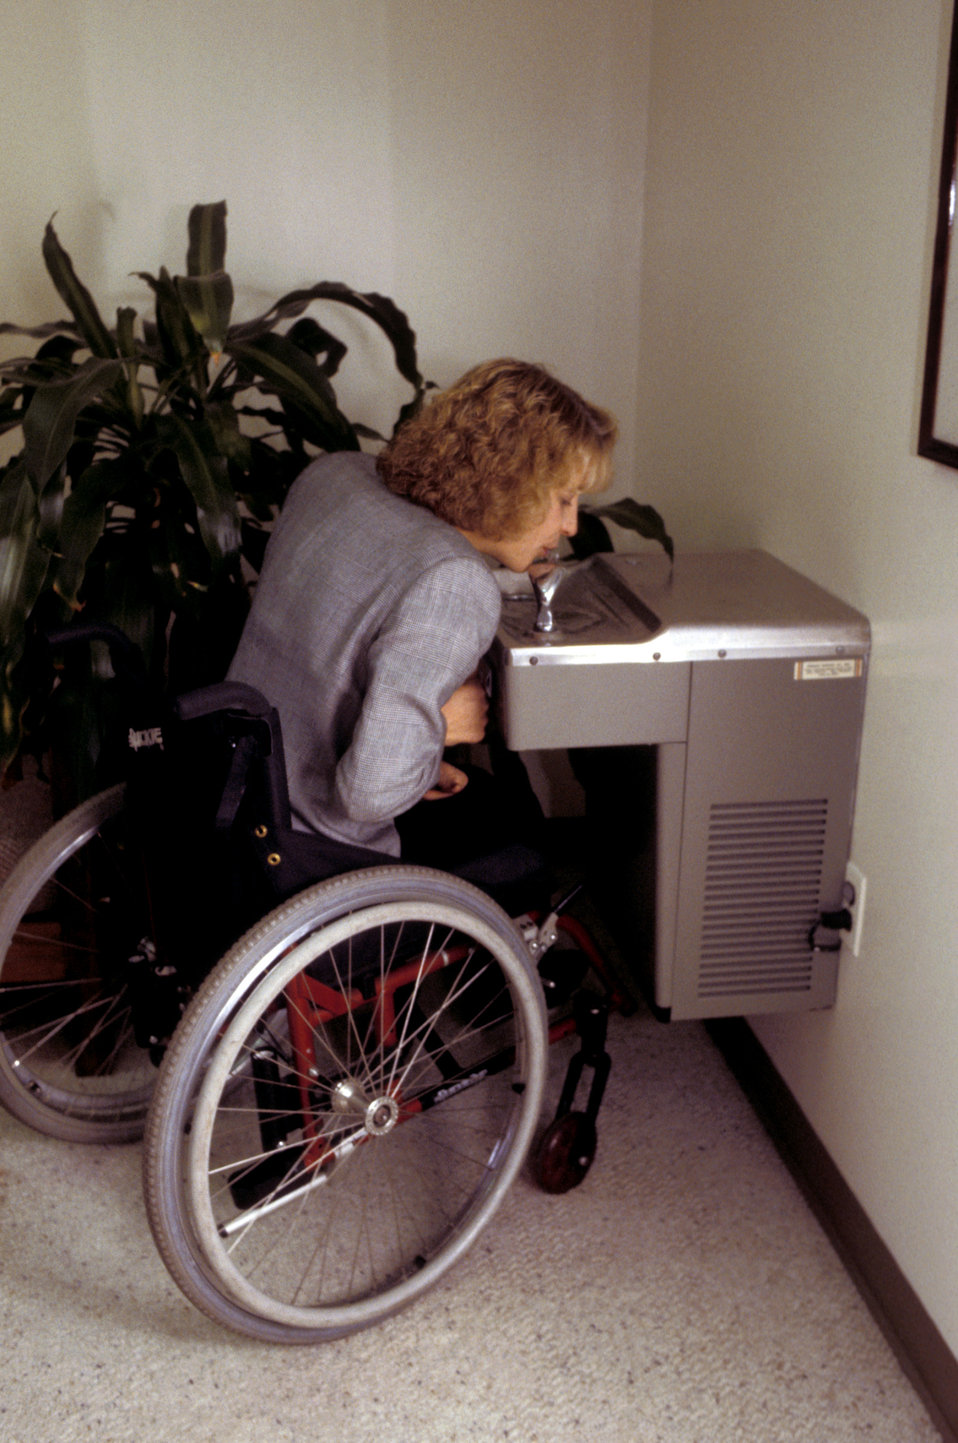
In this 1998 image, a wheelchair-seated woman was about to drink from a stainless steel water fountain which offered two spouts arranged at two different heights, showing that consideration was paid to those mobility-challenged individuals who found themselves in situations such as the one depicted here. Each projecting spout and basin extended out from the wall, and included knee space beneath. The rim-height of the lower unit was set at 30', while the rim height of the upper unit was set at 36'. Each displayed the international symbol describing universal accessibility. These two heights accommodated short and seated users, as well as standing users. It illustrated how sometimes, a single item cannot meet the needs of a broad cross-section of people. In this case a single, adjustable-height unit would have been too expensive to install. Each featured an easy-to-push operating panel on the font that allowed use by fingers, hands or another body part.